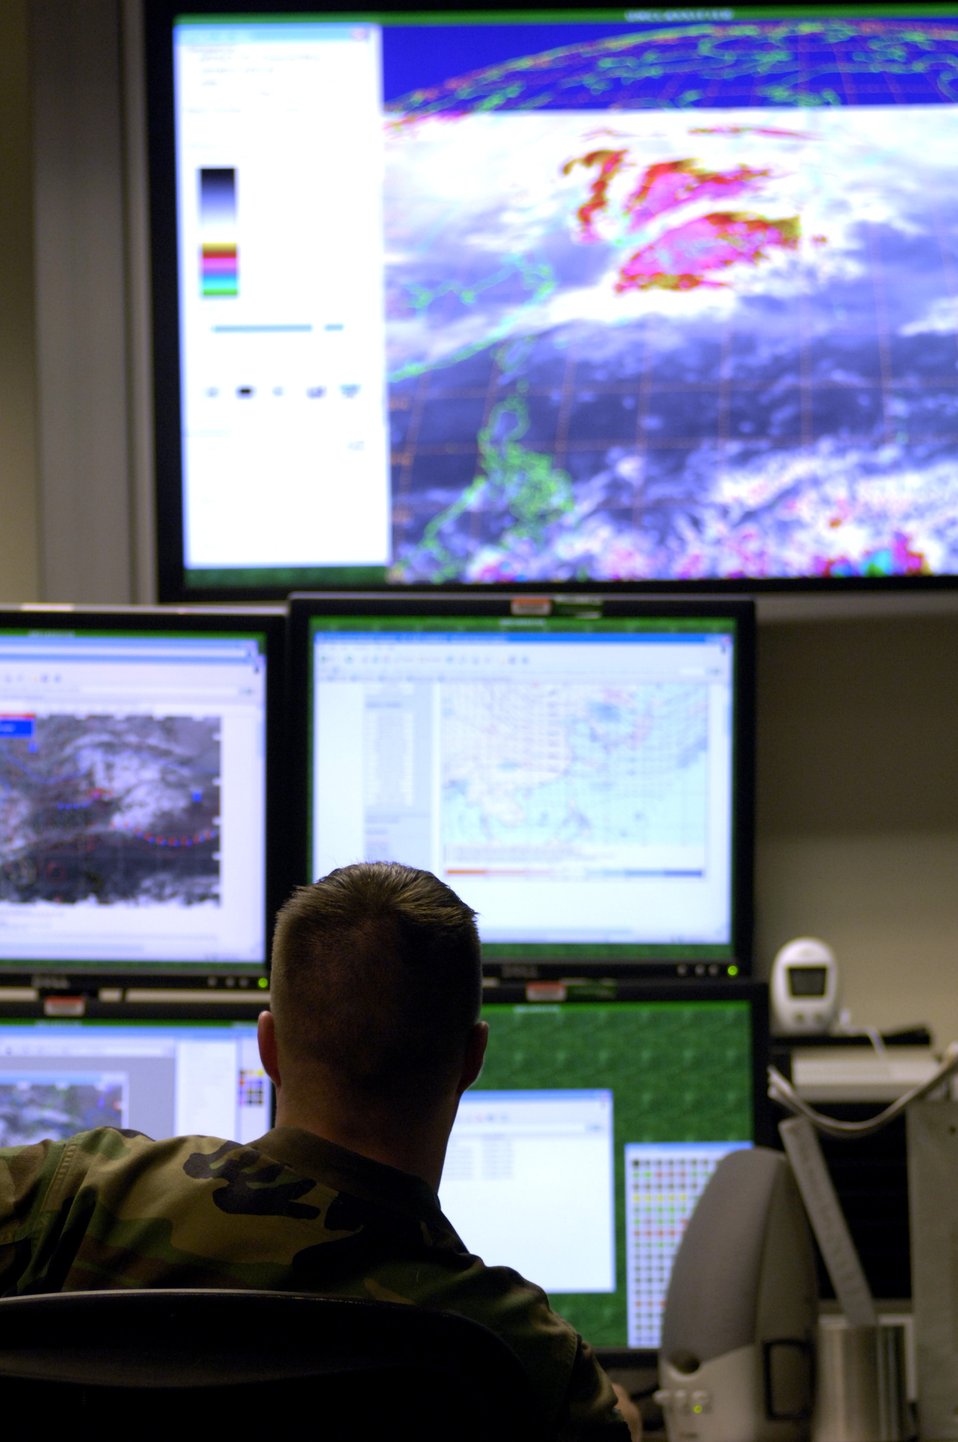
Weather squadrons complete merger

Master Sgt. Charles Hoffman looks over weather imagery of Korea and Japan on the operations floor Tuesday, April 18, 2006, at Hickam Air Force Base, Hawaii. Sergeant Hoffman is a flight chief with the 17th Operational Weather Squadron, which provides Pacific Air Forces with tailored operational forecasts.